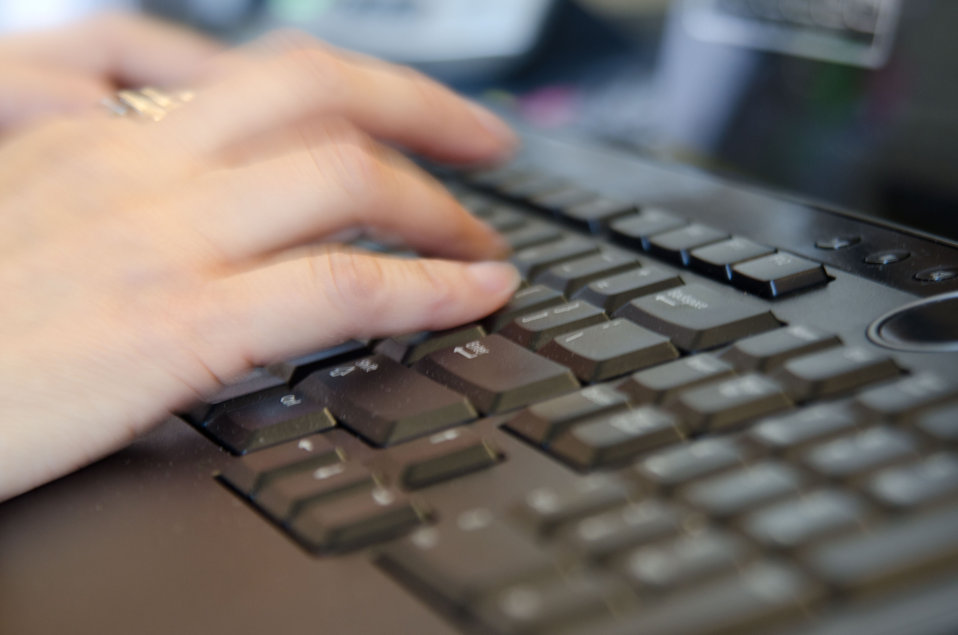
A person in need calling the San Antonio Food Bank (SAFB) on Monday, October 31, 2011 would have reached Help Center Representative Gloria Angel or one of 29 others in the Client Services department at the SAFB headquarters facility in San Antonio, TX. San Antonio Food Bank is a non-profit organization that primarily serves as a clearinghouse receiving and storing truckloads of donated food, produce, and other groceries. SAFB distributes these items to over 500 service agencies that help people in need. They also provide assistance in the application for federal benefits, and host educational and building programs to eligible persons; some of which are provided by the United States Department of Agriculture. It starts with a call to the Client Services department. They handle 5,000 – 6,000 calls each month and serve 16 counties in Southwest Texas. SAFB states, “Nearly one out of every four children and one out of every five adults in Southwest Texas lives in poverty and has difficulty meeting basic nutritional needs.” “We couldn’t do what we do without our partnership with USDA’” said President and CEO Eric Cooper. He continues, “We are privileged in partnering (with the USDA) to feed kids, through the summer, with the Summer Food Service Program, and throughout the year, with the Child and Adult Care Feeding Program (CACFP). To feed seniors, we partner with USDA in the Commodities Supplemental Food Program (CSFP), and the Senior Farmer’s Market (Nutrition) Program. Then work to bring all our (needy) parties together with our Supplemental Nutrition Assistance Program (SNAP) Outreach.
Once families have access to food we believe it is important to educate them. Through the support of the SNAP-Education Program we are able to educate them during their time of need. With this comprehensive approach we are able to get the right food, at the right amount, at the right time, to needy families throughout our community – which allows us to feed the fifty-eight thousand we do, each week.” USDA photo by Lance Cheung.
www.fns.usda.gov/fns/
www.fns.usda.gov/snap/ www.fns.usda.gov/fdd/programs/tefap/